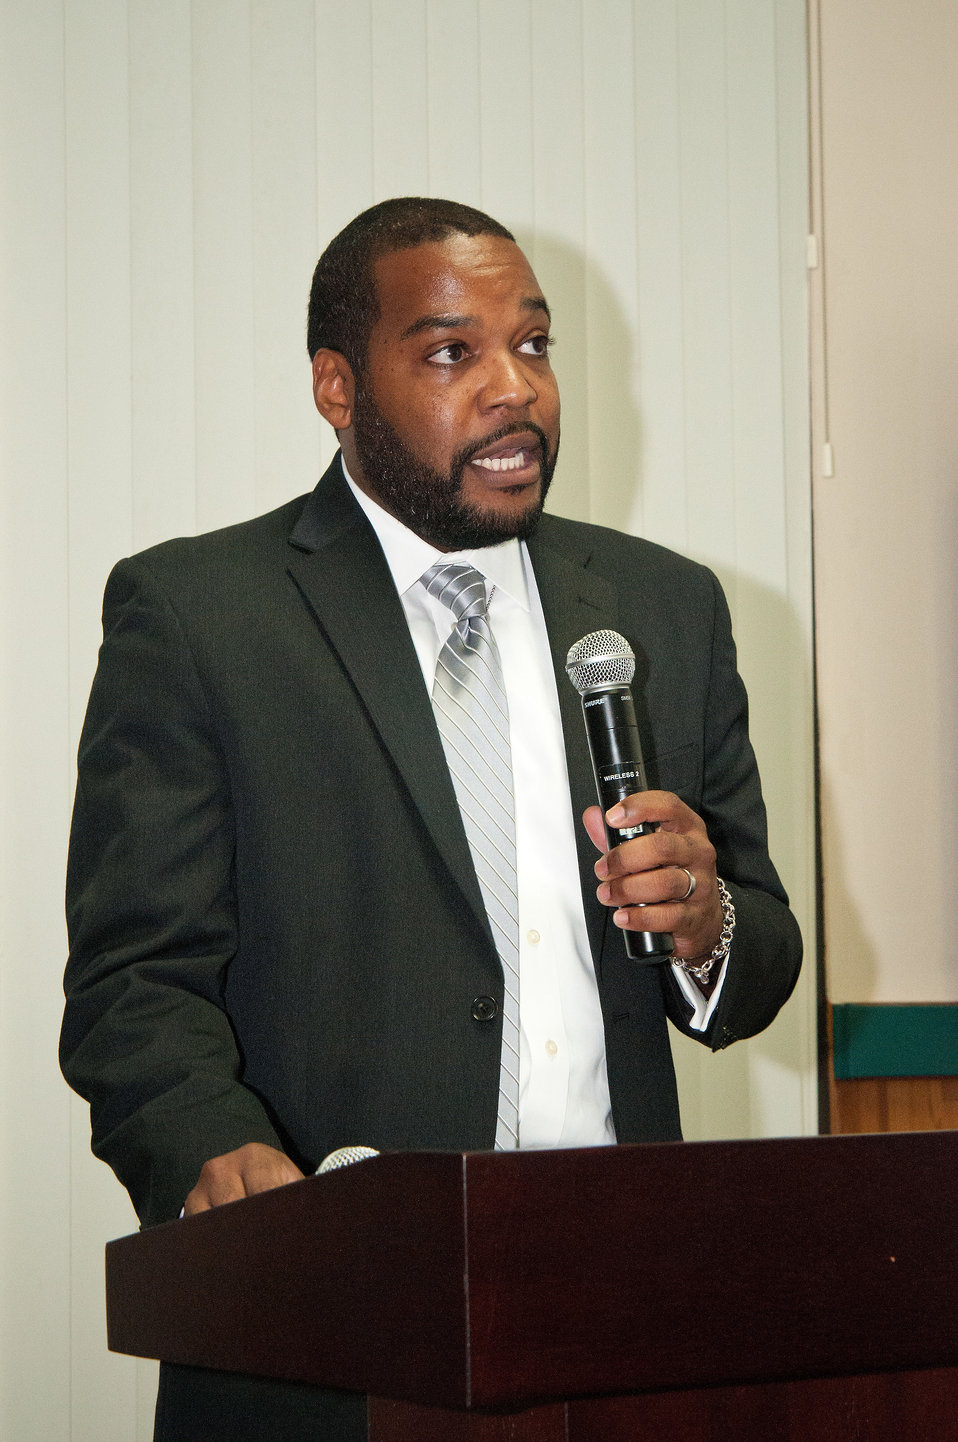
Moderator Roderick Mance welcomes U.S. Department of Agriculture (USDA) employees to USDA’s Office of Human Resources Management (OHRM) Virtual University’s Fall Flash Mentoring Event at USDA in Washington, D.C. on Thursday, Sept. 6, 2012.